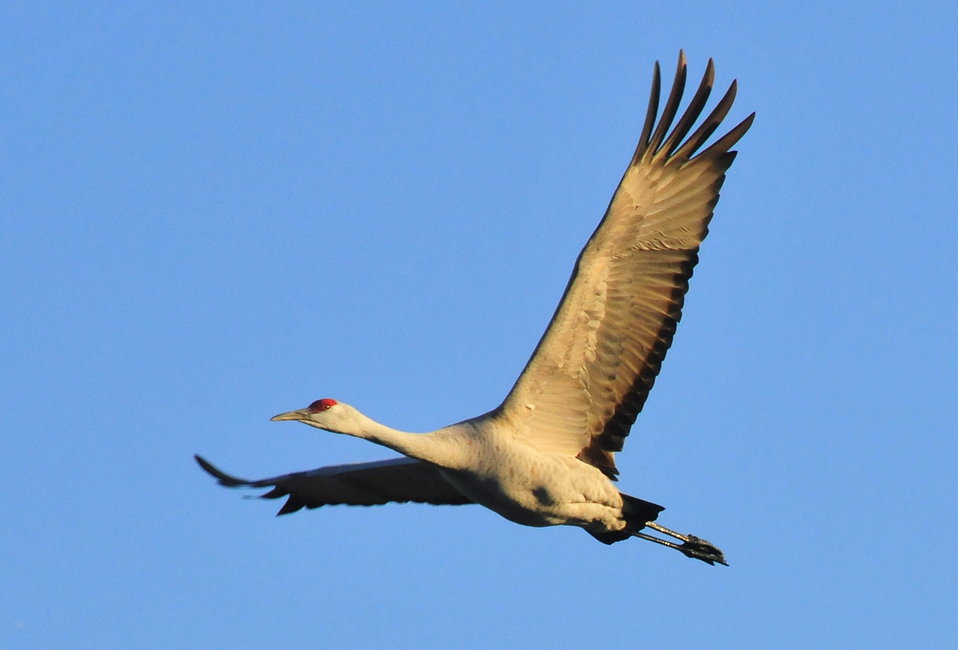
Sandhill Crane 03

Sandhill Crane Photo: Tom Koerner/USFWS